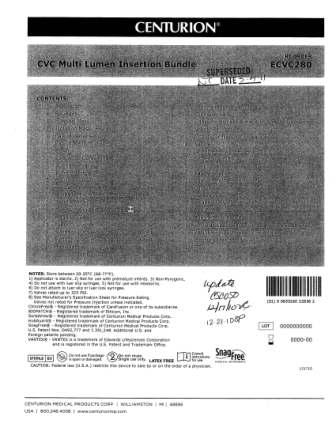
RECALLED - Convenience kits which contain bacteriostatic sodium chloride solution by American Regent

April 1, 2011 - Product Recall - Centurion Medical Products Initiates Voluntary Recall of Customized Convenience Kits (including select Central Venous Catheter, PICC Insertion, and VAD Trays) that contain American Regent’s Bacteriostatic Sodium Chloride Injection, USP, 0.9% 30 mL Multiple Dose Vials.